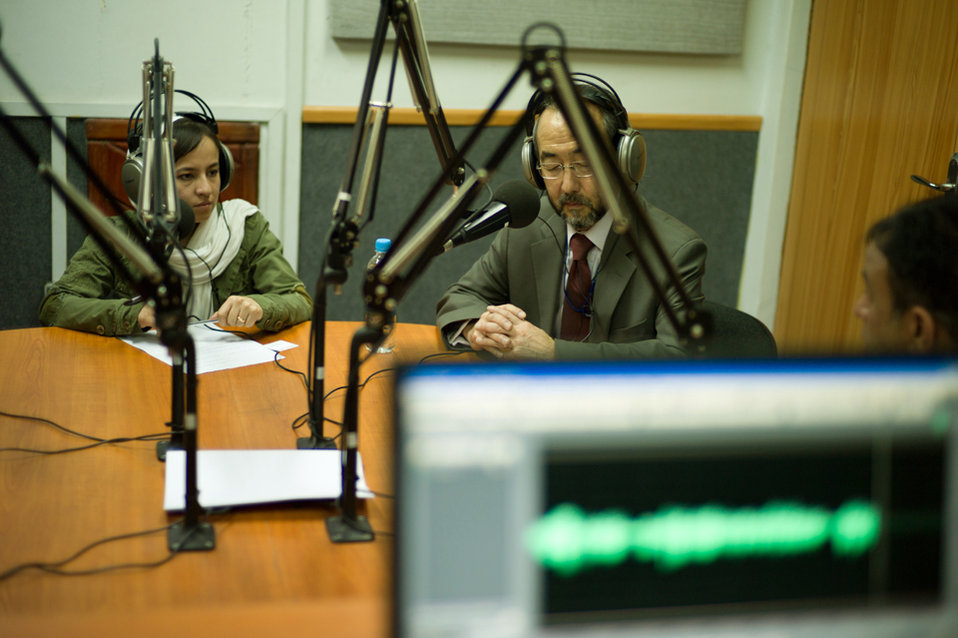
Ken in studio